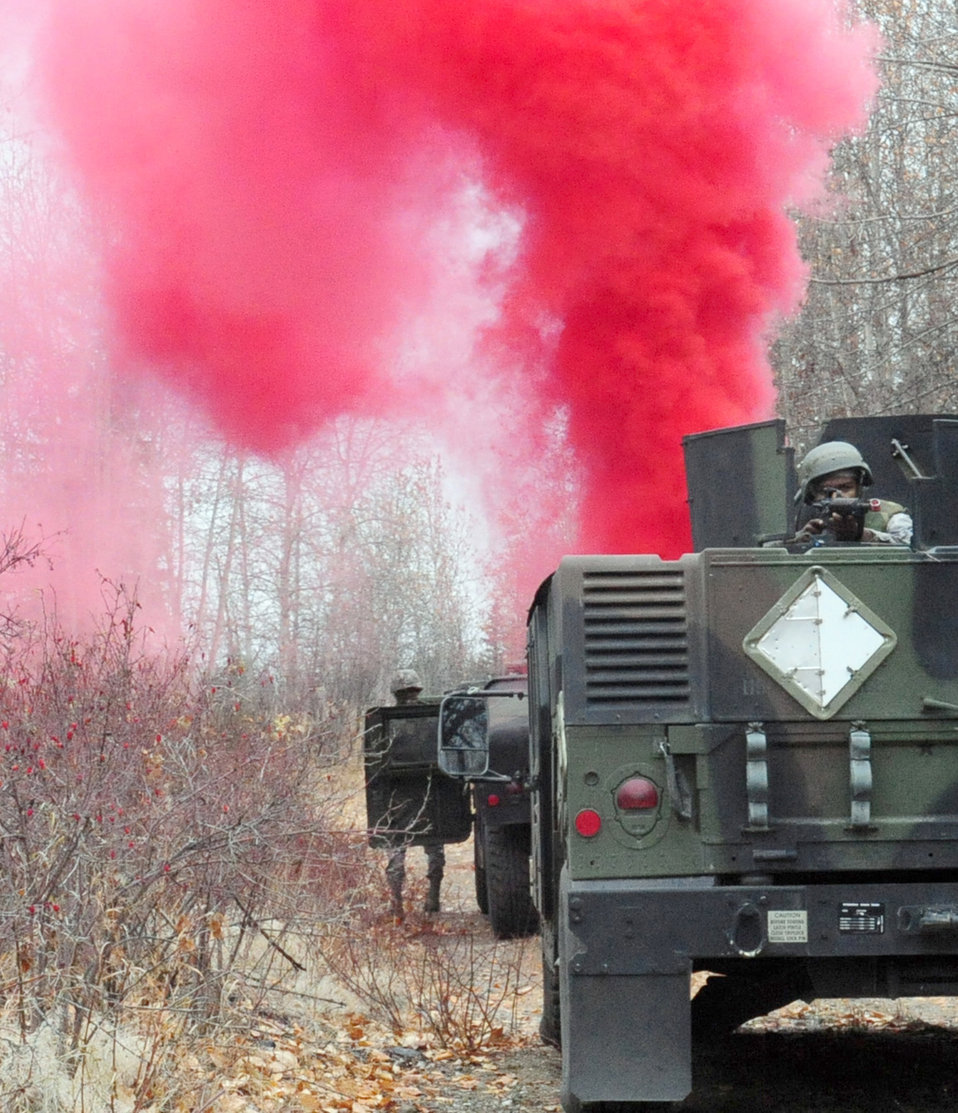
Combat skills training

Airmen deploy a red flare during a training exercise to simulate a